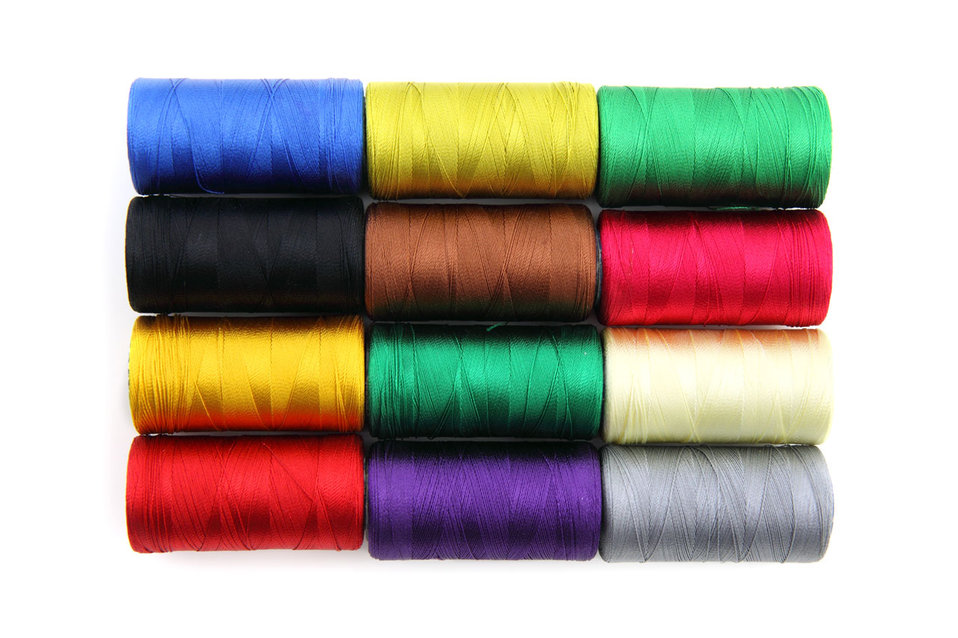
Sewing thread pattern

Colorful sewing thread pattern.